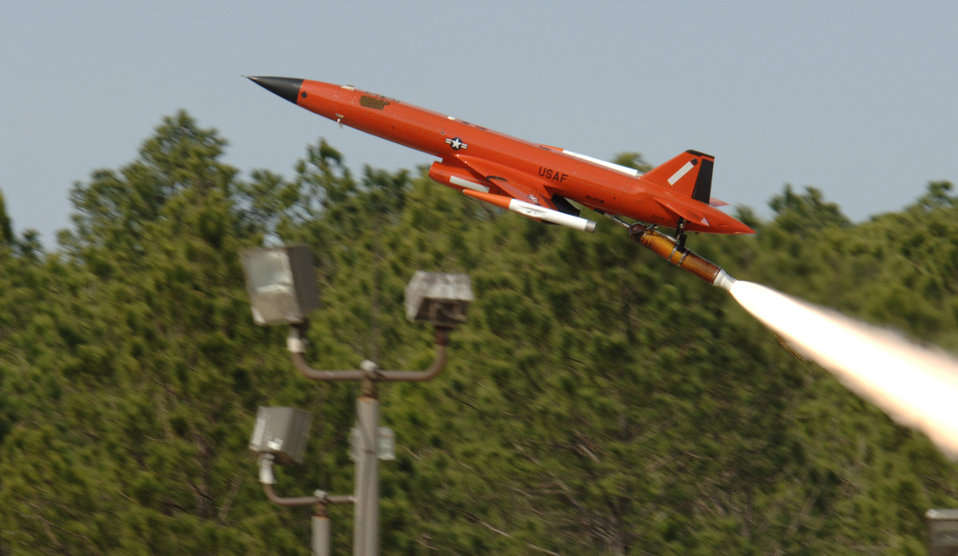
BQM-167 launches

A BQM-167 Air Force Subscale Aerial Target is launched from Tyndall Air Force Base, Fla. The drone provides a threat-representative target for the Air Force Weapon System Evaluation Program.